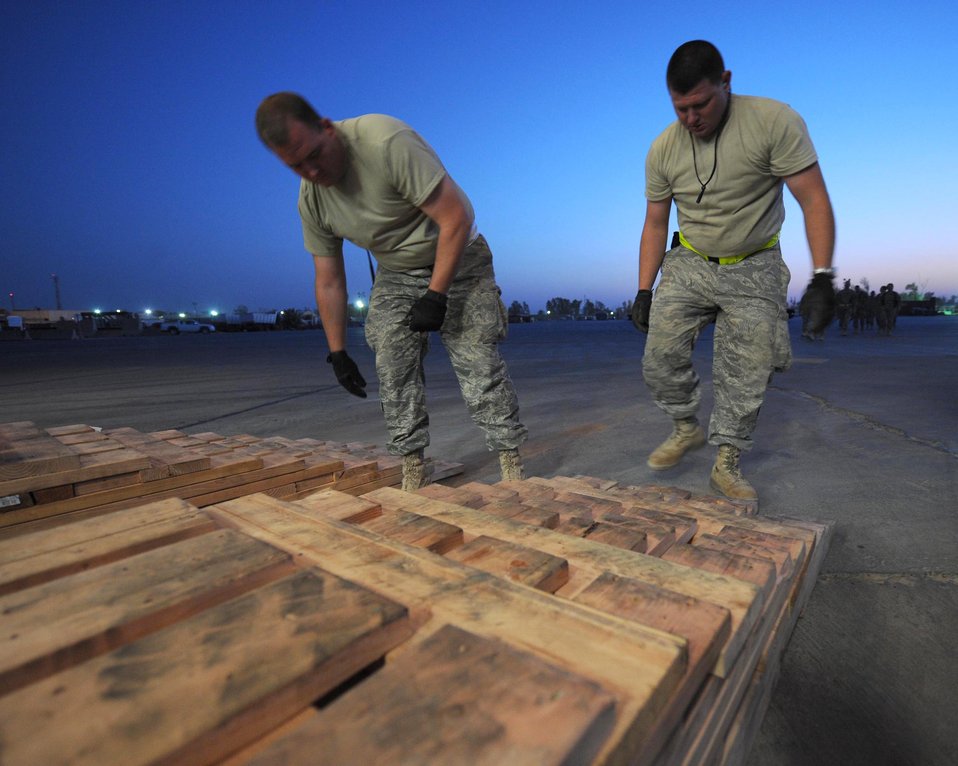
No cargo too large for Sather aerial port Airmen

Staff Sergeants Jessy Harper (left) and Jacob McCloud check the placement of special 2,000 pound ramps built to unload new communication units from a C-17 Globemaster III cargo aircraft. Sergeants Harper and McCloud are deployed to the 447th Expeditionary Logistics Readiness Squadron.